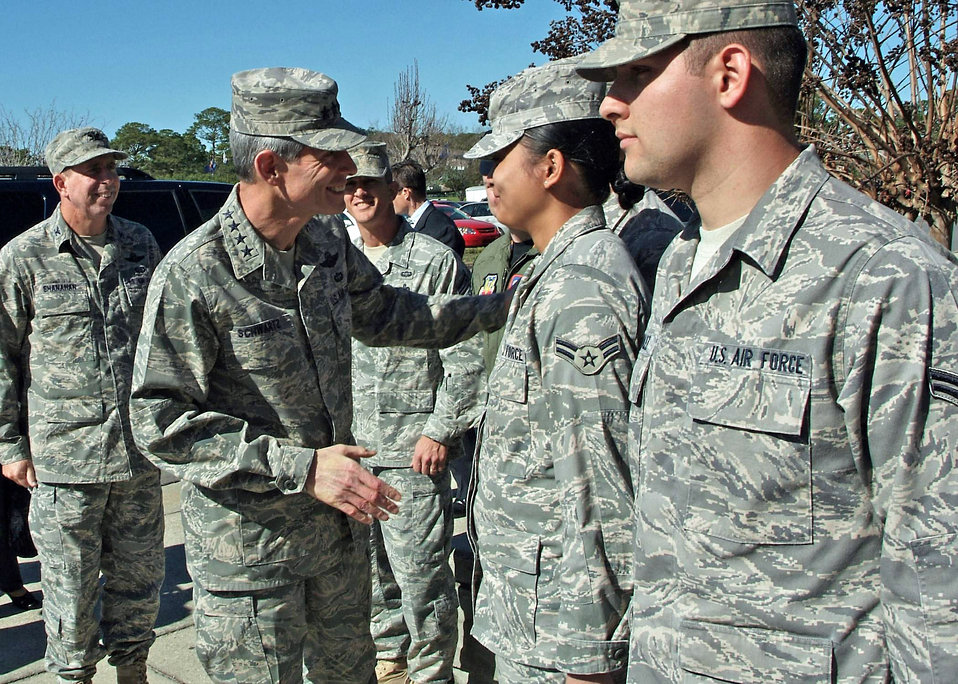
Chief of staff visits Hurlburt Field Airmen

Air Force Chief of Staff Gen. Norton Schwartz meets Senior Airman Grace Blazado during a visit to the 505th Command and Control Wing Jan. 9 at Hurlburt Field, Fla. Airman Blazado is a 505th Communications Squadron client support administrator.